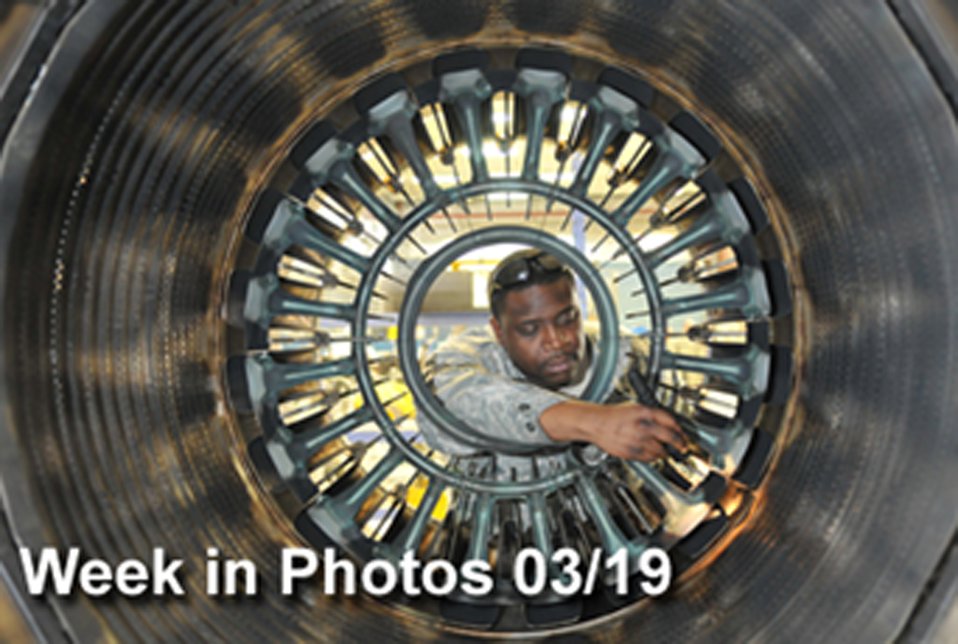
Week in Photos

Air Force Week in Photos for March 19, 2010, highlights photos from around the Air Force. In this photo by Airman 1st Class Nick Wilson, Staff Sgt. Christopher Matthews inspects an F-16 Fighting Falcon exhaust nozzle March 16, 2010, at Spangdahlem Air Base, Germany.